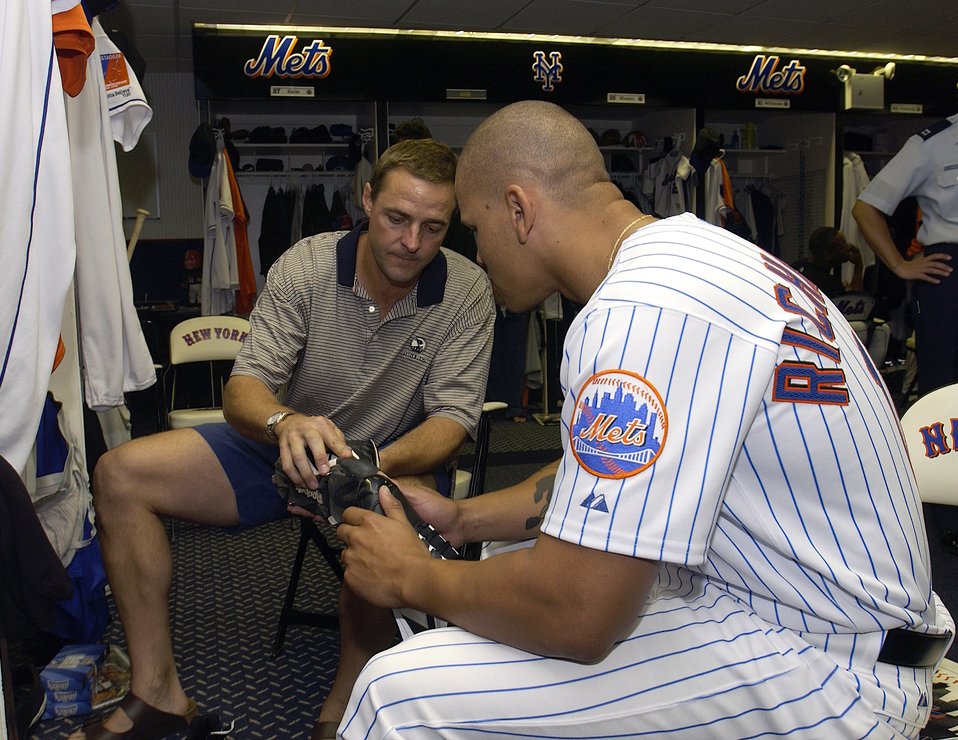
From Airman to Met

NEW YORK -- New York Mets pitcher Al Leiter gives a pair of cleats to Senior Airman Chardo Richardson at Shea Stadium on June 22. Airman Richardson was here for the second part of a job swap with Mr. Leiter. The Mets pitcher was a boom operator for a day at McGuire Air Force Base, N.J., on May 24. Airman Richardson is a boom operator with the 32nd Air Refueling Squadron at McGuire.